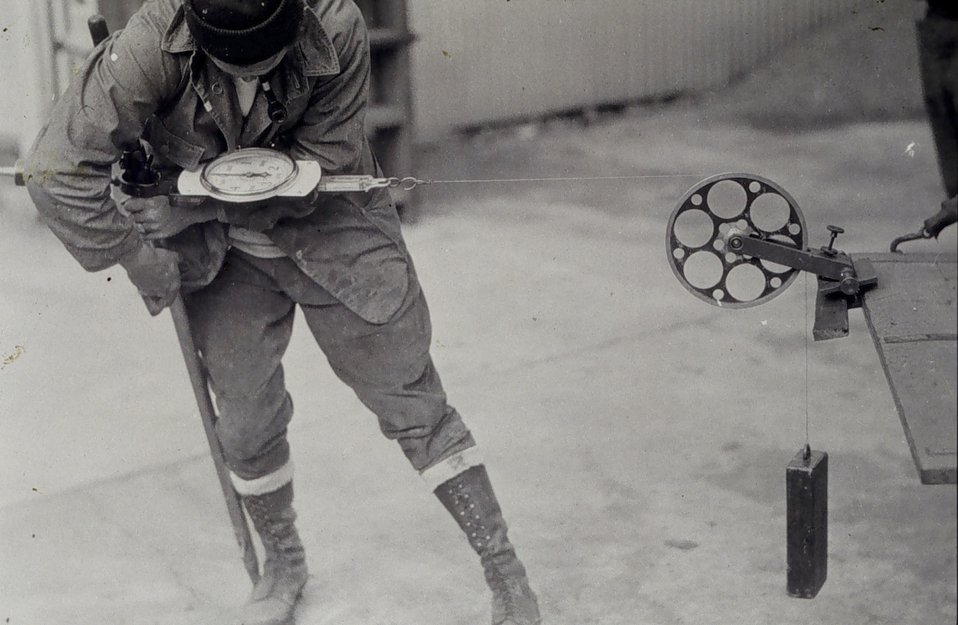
Base line measurement - maintaining proper tension on the tape.